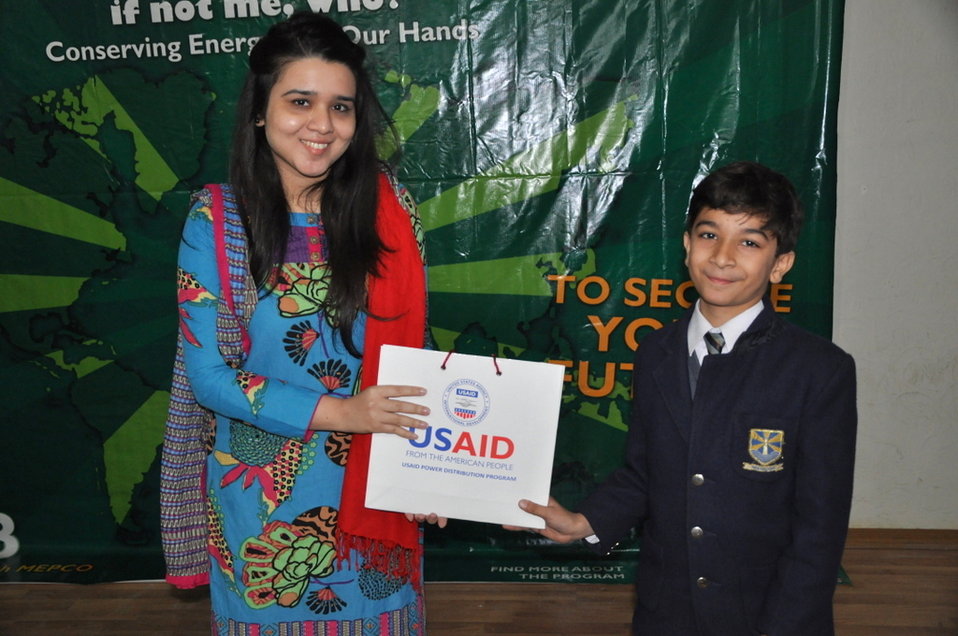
USAID Power Distribution Program-Energy Conservation Seminar Beaconhouse School System, Multan